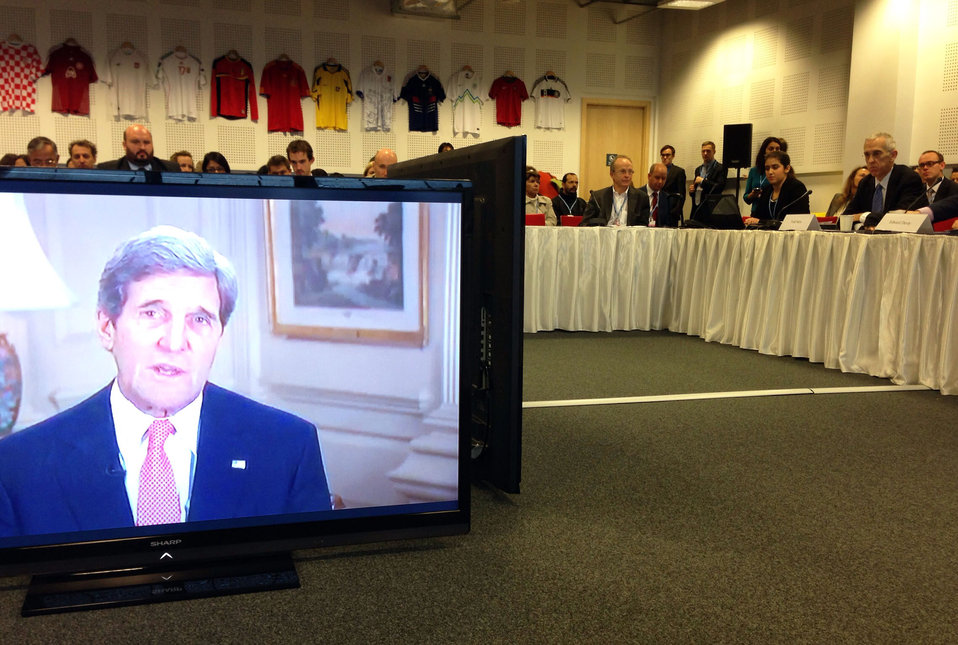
Secretary Kerry Announces Funding for the Initiative for Sustainable Forest Landscapes

Secretary Kerry announces $25 million from the U.S., as part of the more than $250 million in planned total commitments from partner countries, to launch the Initiative for Sustainable Forest Landscapes at the U.S. Center at the 19th Session of the Conference of the Parties to the UN Framework Convention on Climate Change (COP19) in Warsaw, Poland, on November 20, 2013.